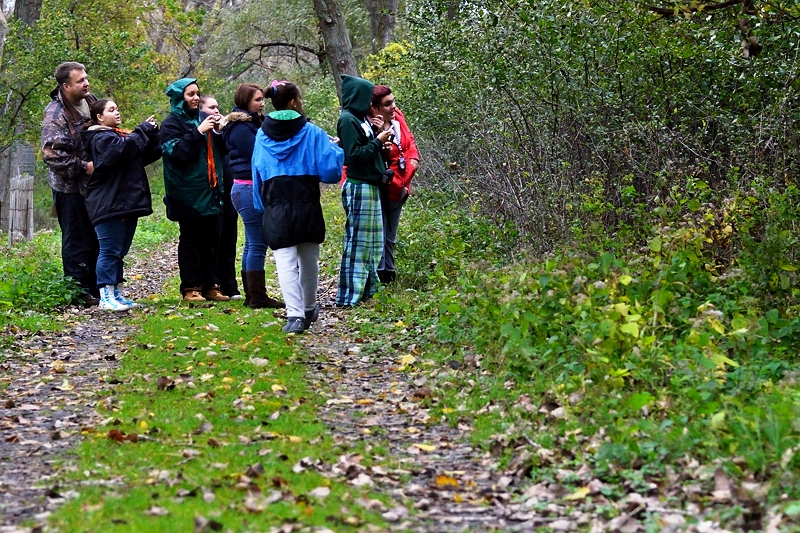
Students taking photos during the SNAP workshop

Students preparing to take photos along one of the trails at Tifft Nature Preserve